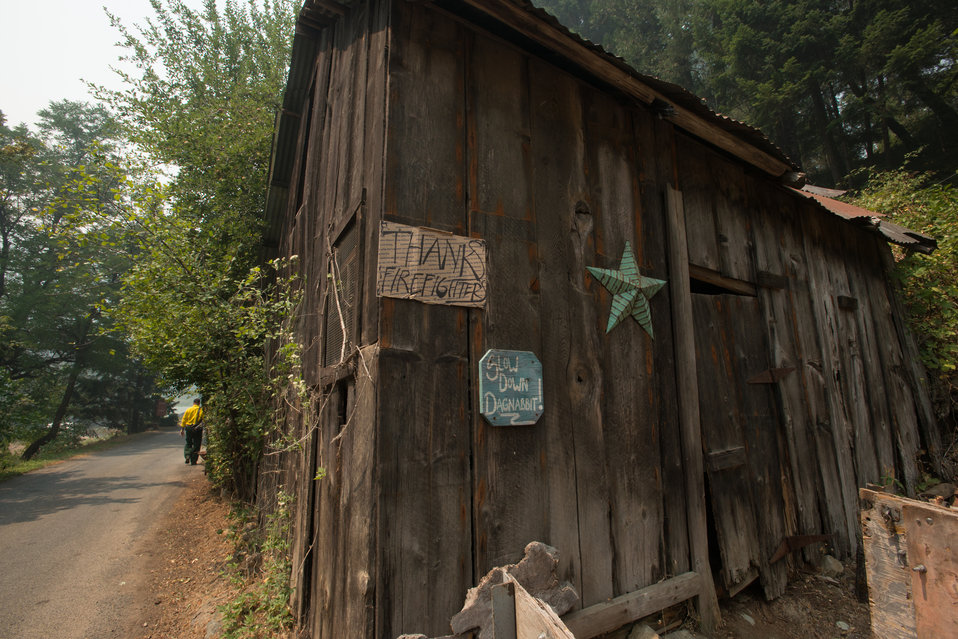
Residents appreciate the efforts of firefighters serving the community of Sawyers Bar, CA, and show it with signs along the main road through their community, on Wednesday, Aug. 6, 2013. House by house contact was performed by Structural/wildlands firefighters to assess prevention actions needed to make structures more survivable if the main fire comes here, during the Salmon River Complex Fire, northwest of Sawyers Bar and west of Etna and Yreka, CA in the Klamath National Forest.